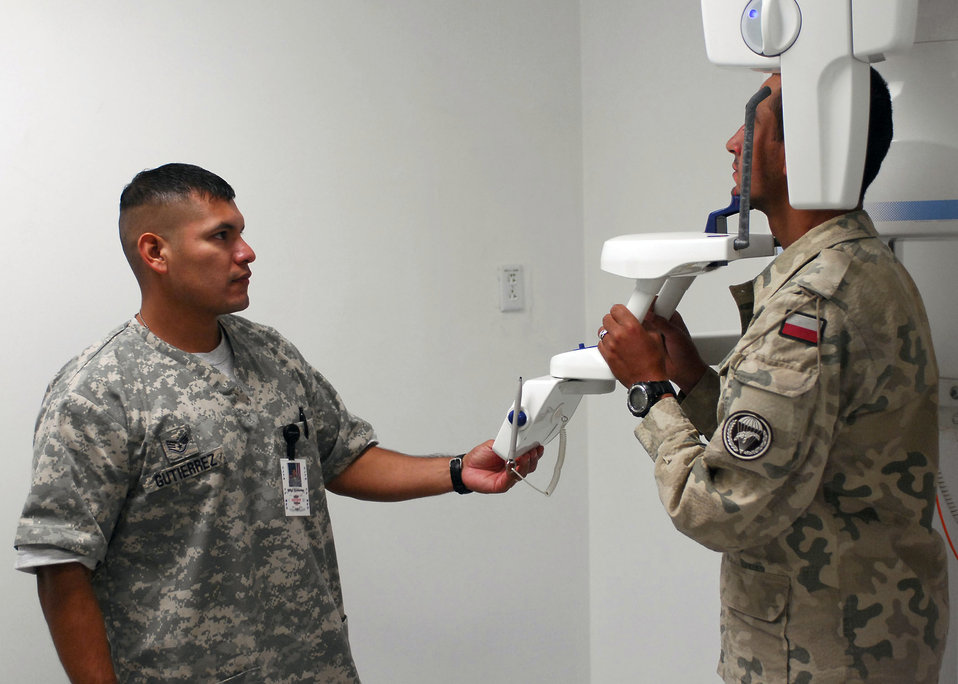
Family uses technology to cope with deployment separation

Staff Sgt. Juan Gutierrez positions a patient for a panoramic X-ray Sept. 26, 2009, at Bagram Airfield, Afghanistan. Sergeant Gutierrez is deployed to Afghanistan for six months, currently serving as the dental clinic NCO in charge for Task Force Medical.